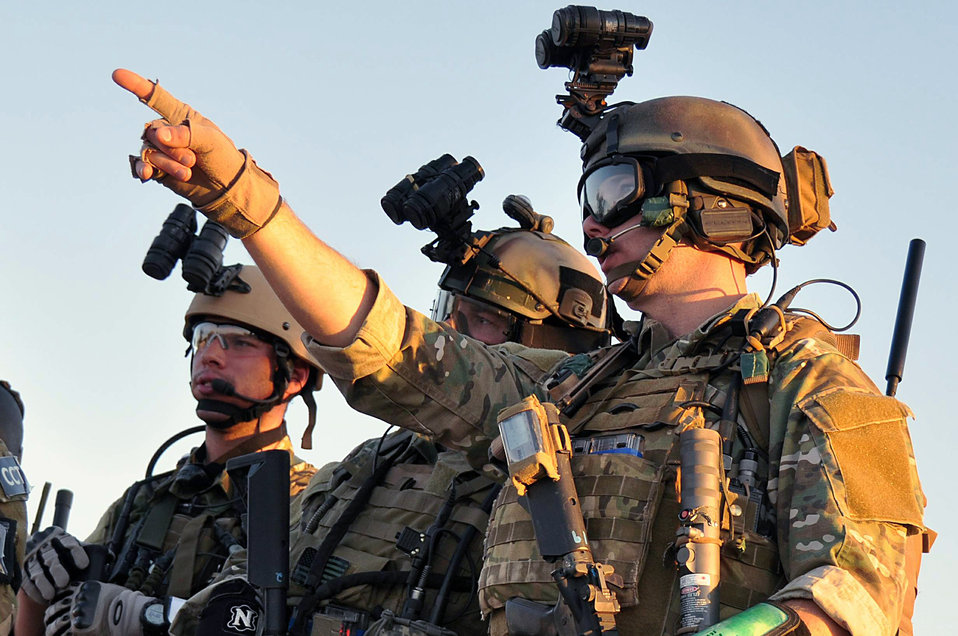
Test Center links mobility to 'boots on the ground'

Air National Guard combat controllers plan an exercise May 7 to help officials test the Situational Awareness Data Link, or SADL, at the Air National Guard/Air Force Reserve Test Center. The tactical data link commonly used for close-air support promises to benefit mobility operations as well.